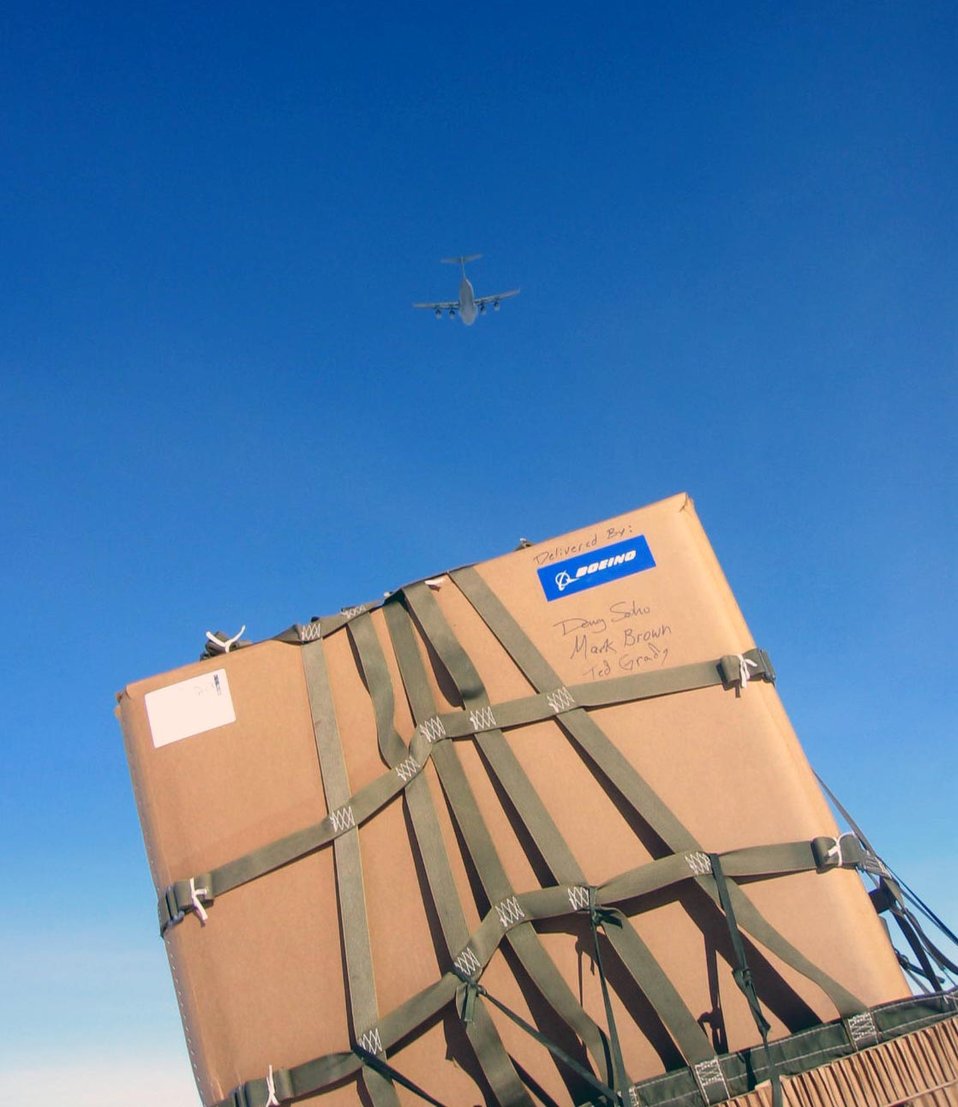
C-17 polar airdrop capability successful

A C-17 Globemaster III flys above a containerized delivery system bundle just airdropped to the South Pole Dec. 18. By validating the C-17 capability to complete airdrop missions at the Geographical South Pole, Joint Task Force-Support Forces Antarctica demonstrated its ability to provide mid-winter emergency re-supply and flexible support to the National Science Foundation and U.S. Antarctica Program.